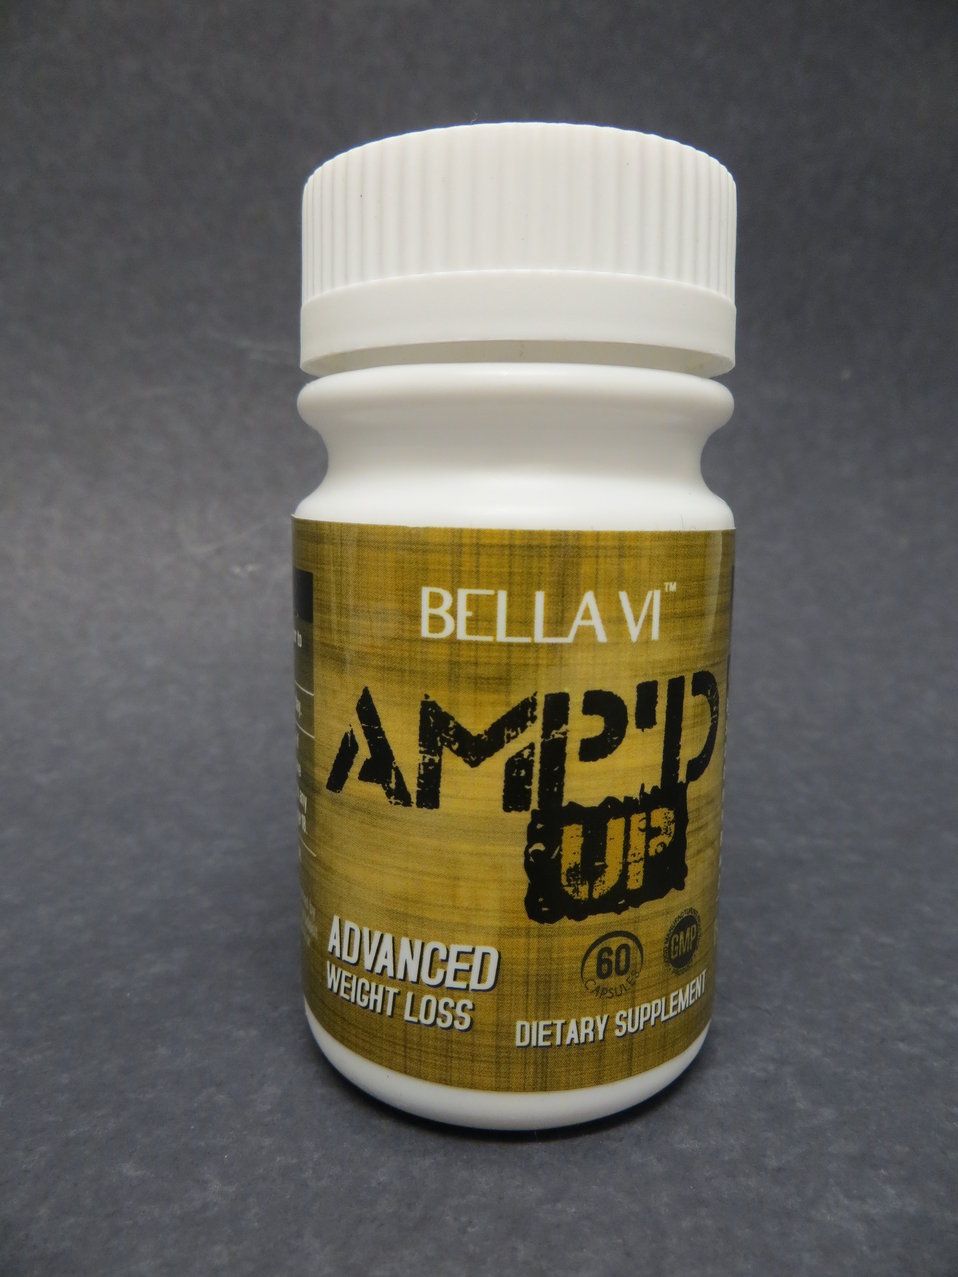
Bella Vi Amp'd Up

October 10, 2013 - The FDA is advising consumers not to purchase or use Bella Vi Amp’d Up, a product promoted and sold for weight loss. The product was found to contain undeclared sibutramine and phenolphthalein. For more information, go to www.fda.gov/drugs/resourcesforyou/consumers/buyingusingme...

And read this Consumer Update: Beware of Fraudulent ‘Dietary Supplements’